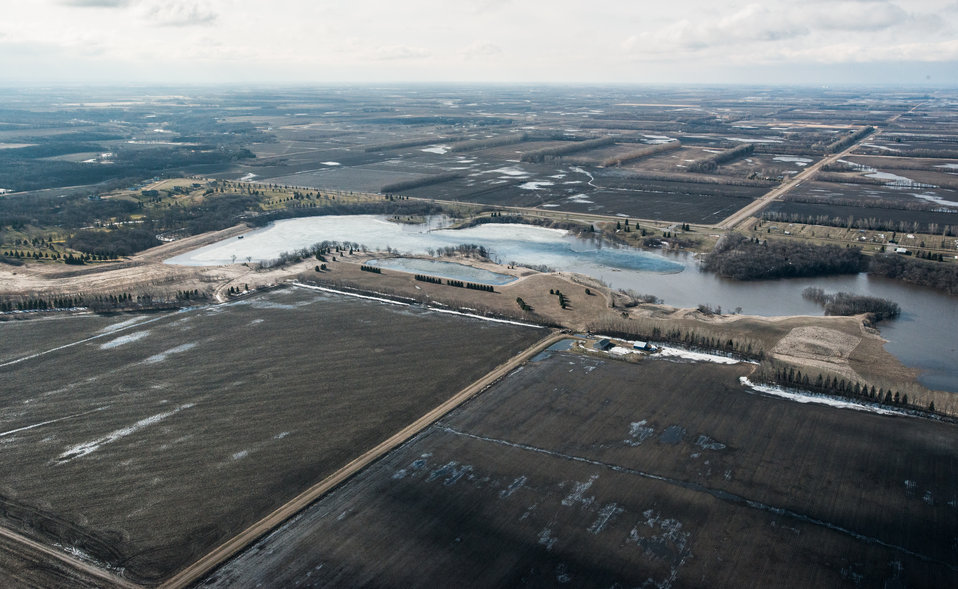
Larimore Dam, a Public Law PL83-566 Small Watershed Program, in Grand Forks County, ND, on Wednesday, May 1, 2013. A golf course bounds the outlet area. A farmstead bounds the spillway. Other areas around the dam includes areas for recreation and other uses.